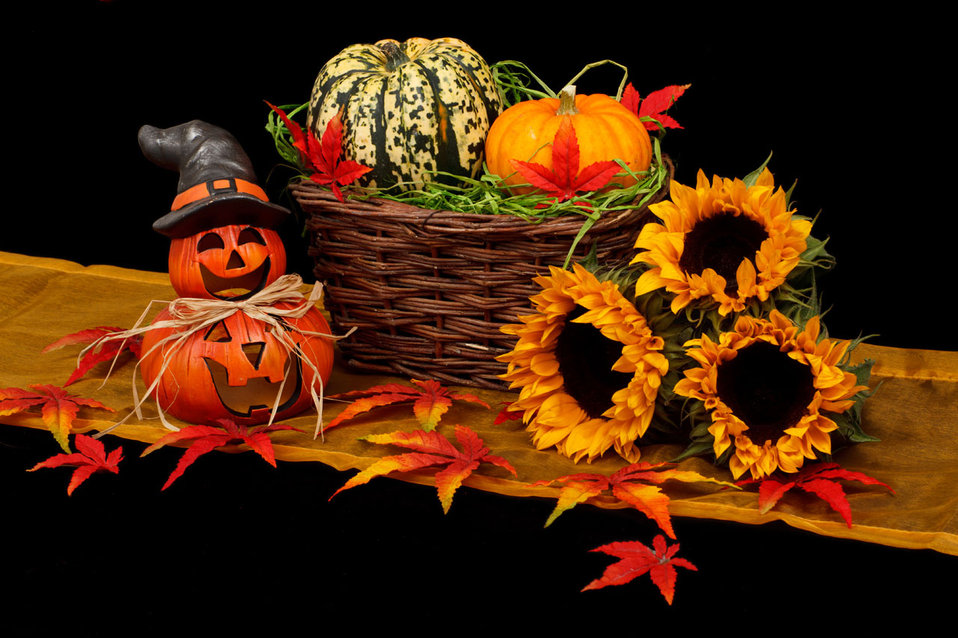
Halloween autumn decoration

Halloween still life autumn decoration with pumpkins on black background.